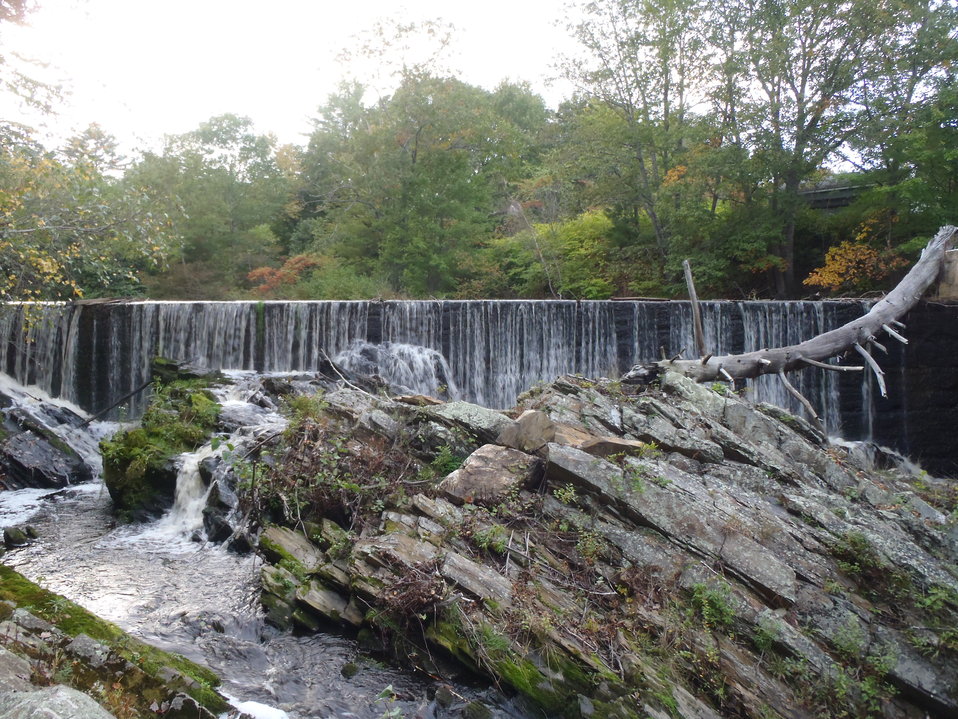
Small dams are barriers to fish